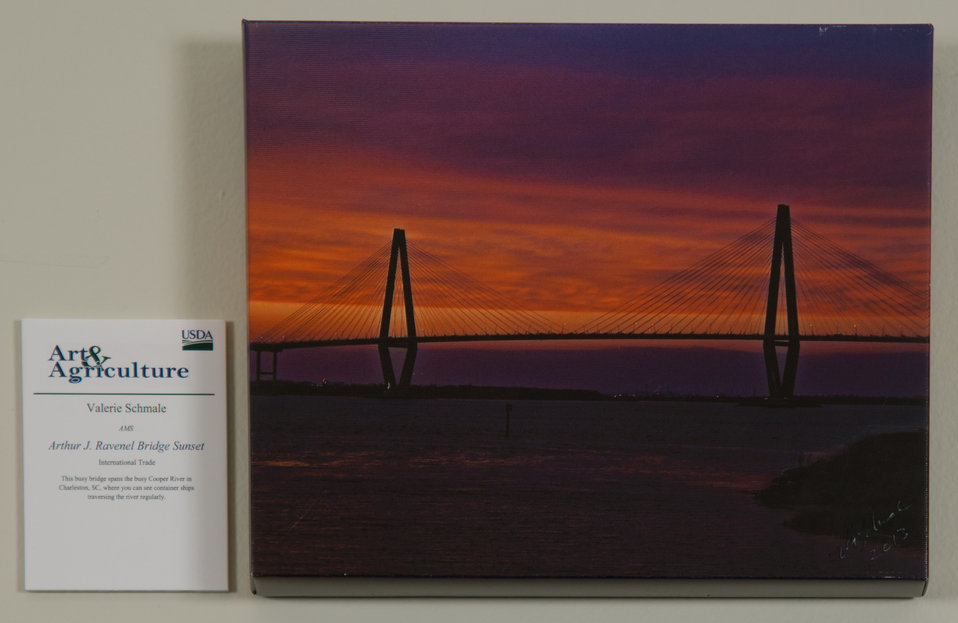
Online Viewer's Choice entries of the 2013 Art & Agriculture, Tuesday, July 9, 2013, in the South Building, Washington, D.C. Themes were expressed by employees from across the department and the contest was open to full-time and part-time USDA employees. Winning artwork will be displayed till the end of the year. U.S. Artistic expression is a creative outlet that is vital for an individual to grow and develop.